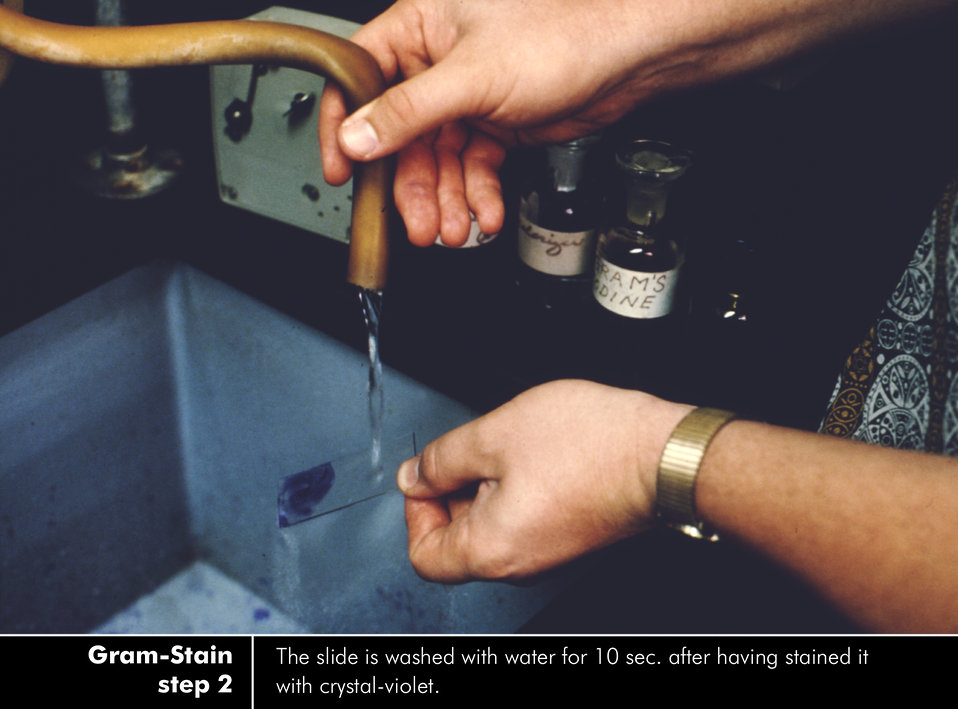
Gram-stain procedure - Step 2 of 7. See PHIL ID#'s: 3433, 3426, 3427, 3435, 3437, 3436, 3434 for the complete set.